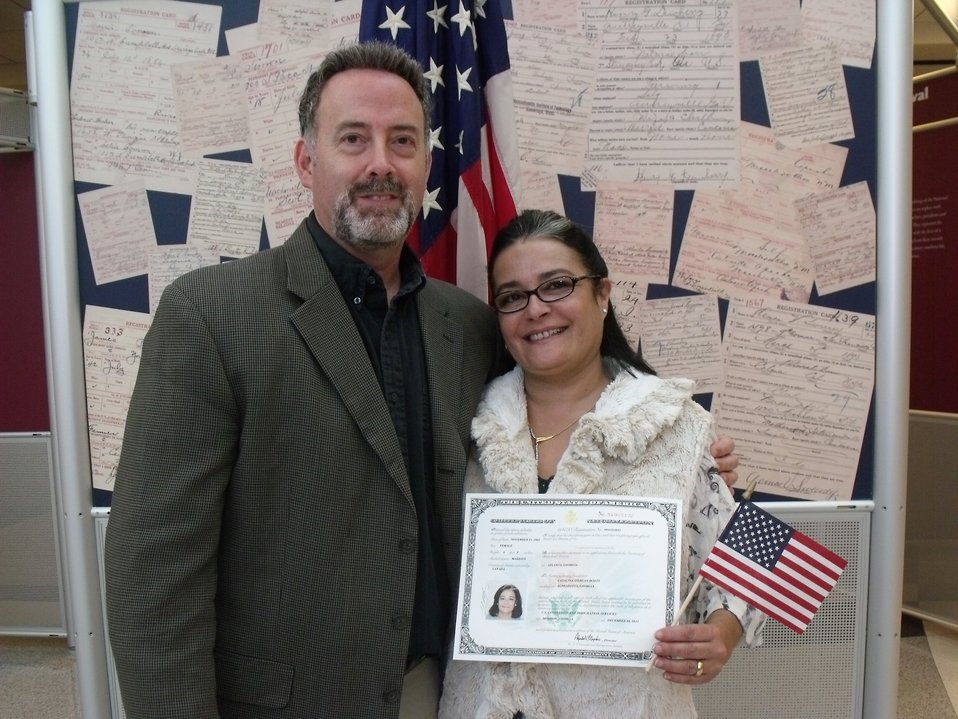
New Citizens